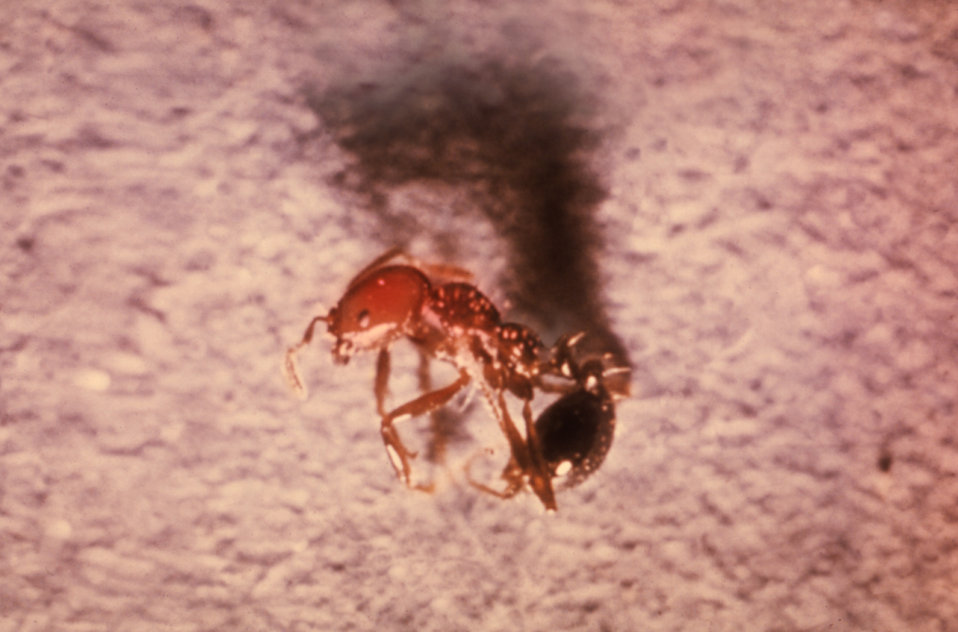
This is a Red Imported Fire Ant, Solenopsis invicta, formerly known as Solenopsis saevissima var. richteri.